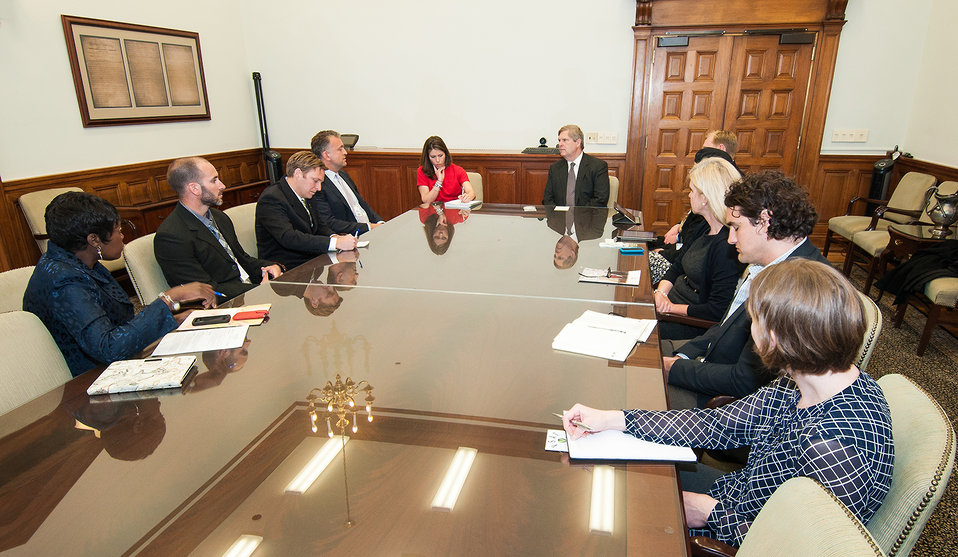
(L to R) U.S. Department of Agriculture (USDA) Office of Advocacy and Outreach Carolyn Parker, Archie’s Acres and Veteran’s Sustainable Agriculture Training (VSAT) Eric Boyd, Archie’s Acres and Veteran’s Sustainable Agriculture Training (VSAT) graduate, Forager Mike’s Superfoods Dang Hot Sauce Mike Hanes, Archie’s Acres Veteran’s Sustainable Agriculture Training (VSAT)Dylan Ratigan, USDA Deputy Chief of Staff Anne MacMillan, Agriculture Secretary Tom Vilsack, Archi’s Acres and Veteran’s Sustainable Agriculture Training (VSAT), Colin and Karen Archipley, Veteran’s Valor Fund representative Filomena Spiese, University of Vermont and Archies Acres representative Jeff Spees, and USDA Marketing and Regulatory Programs Elanor Starmer met at USDA in Washington, D.C. on Tuesday, Apr. 3, 2013. Archie’s Acres in association with a local university offers the Veteran’s Sustainable Agriculture Training (VSAT) program to active-duty military, veterans and anyone interested in sustainable agriculture as a career. Colin and Karen run a state-of-the-art, organic, hydroponic greenhouse operation in Escondido, CA. The farm produces basil, kale, avocados and a variety of other crops for the local market.